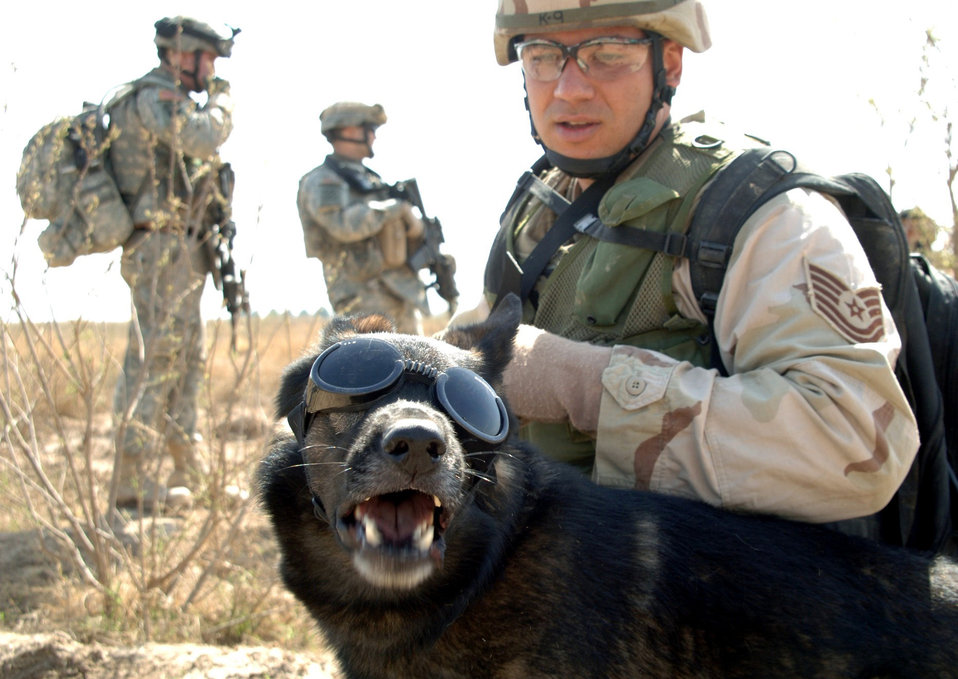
Protective

Tech. Sgt. John Mascolo and his military working dog, Ajax, await a helicopter pickup outside Forward Operating Base Normandy, Iraq, on Tuesday, Feb. 28, 2006. Ajax is wearing